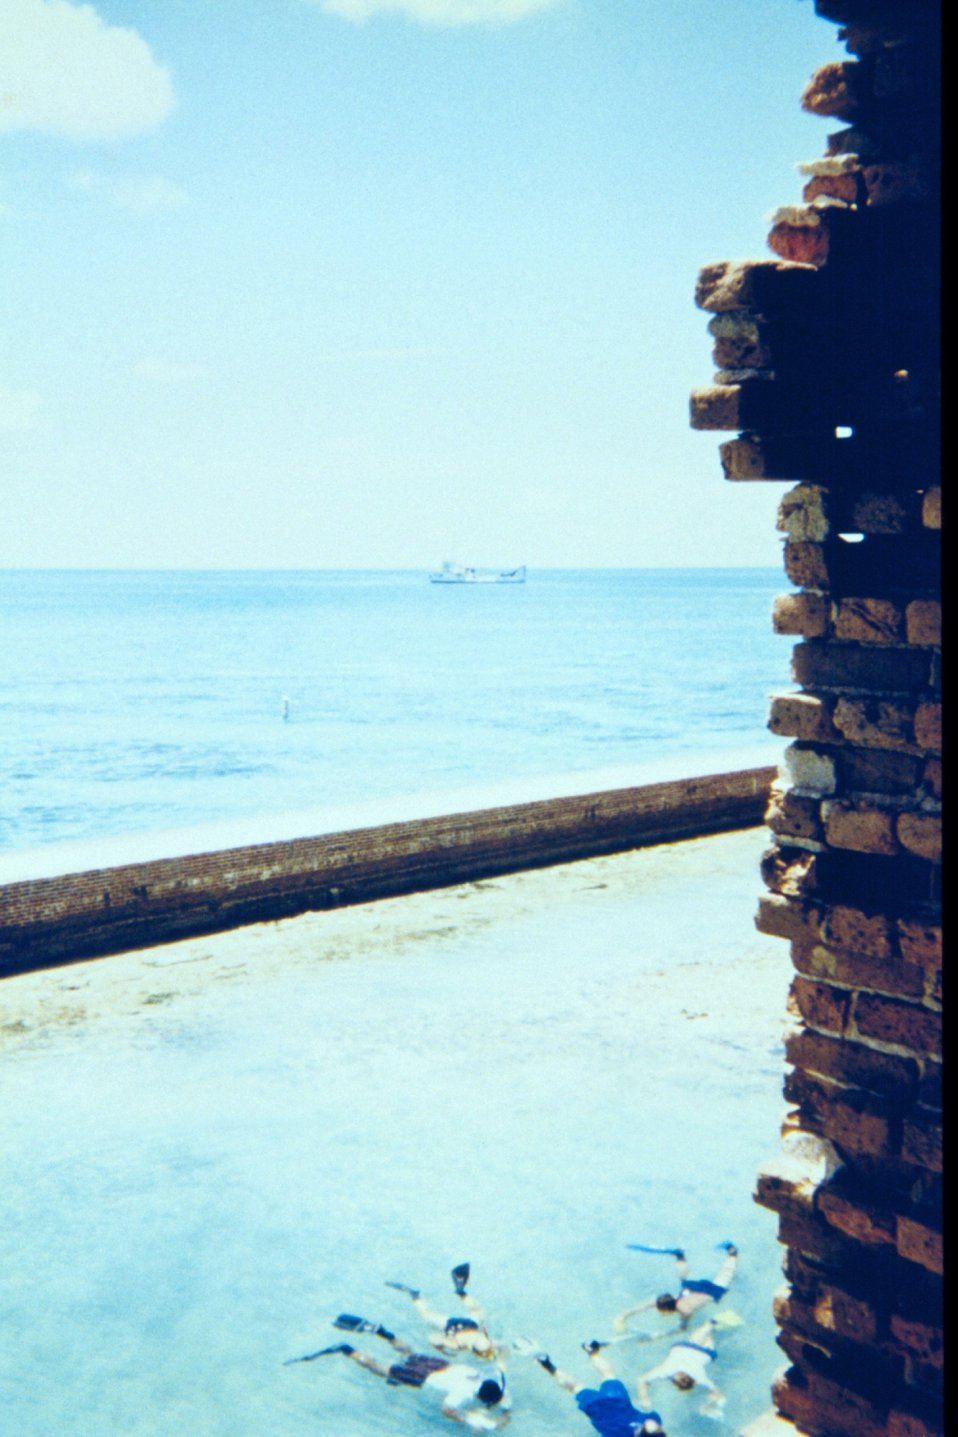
Snorkelers studying marine life in the moat